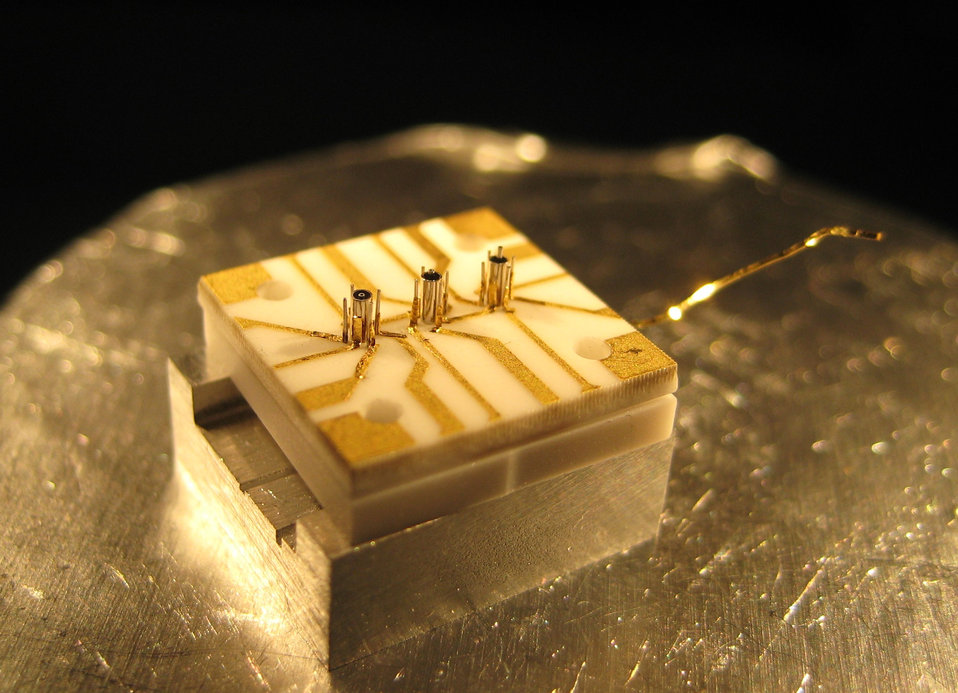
Stylus trap

The NIST 'stylus trap' can hold a single ion (electrically charged atom) above any of the three sets of concentric cylinders on the centerline. The device could be used as a stylus with a single atom 'tip' for sensing very small forces or an interface for efficient transfer of individual light particles for quantum communications.